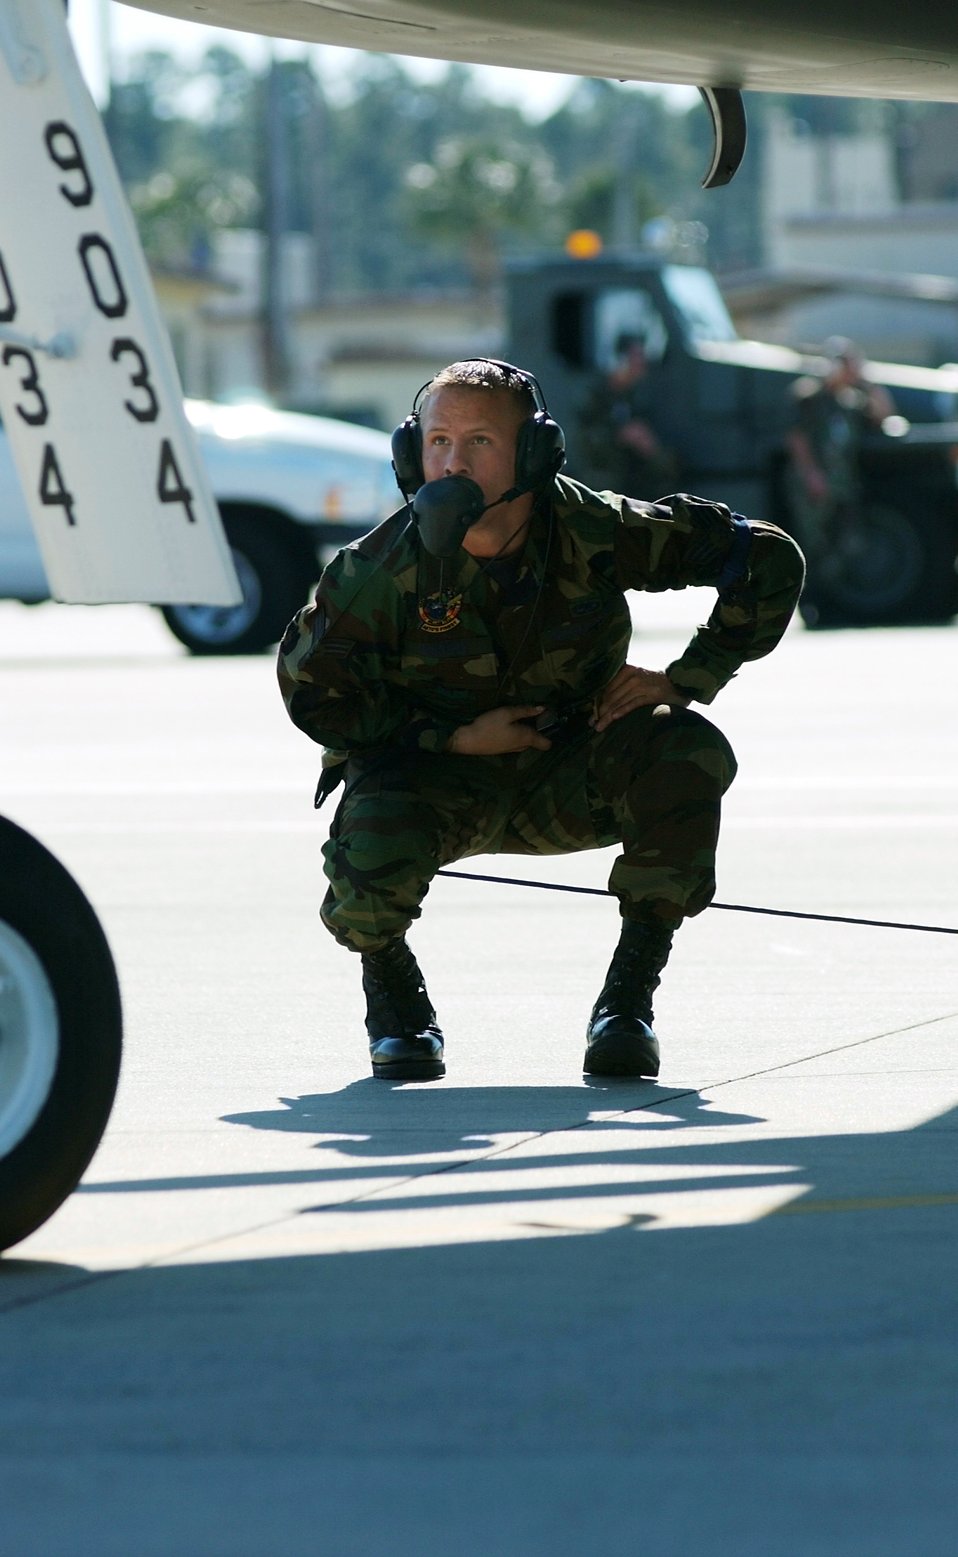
William Tell 2004

TYNDALL AIR FORCE BASE, Fla. -- Senior Airman Audie Murphy pre-flights an F-15 Eagle during William Tell 2004 here Nov. 8. The two weeks of competition will challenge pilots, weapons loaders and maintainers from five F-15 fighter wings. Airman Murphy is a crew chief assigned to the 95th Aircraft Maintenance Unit.